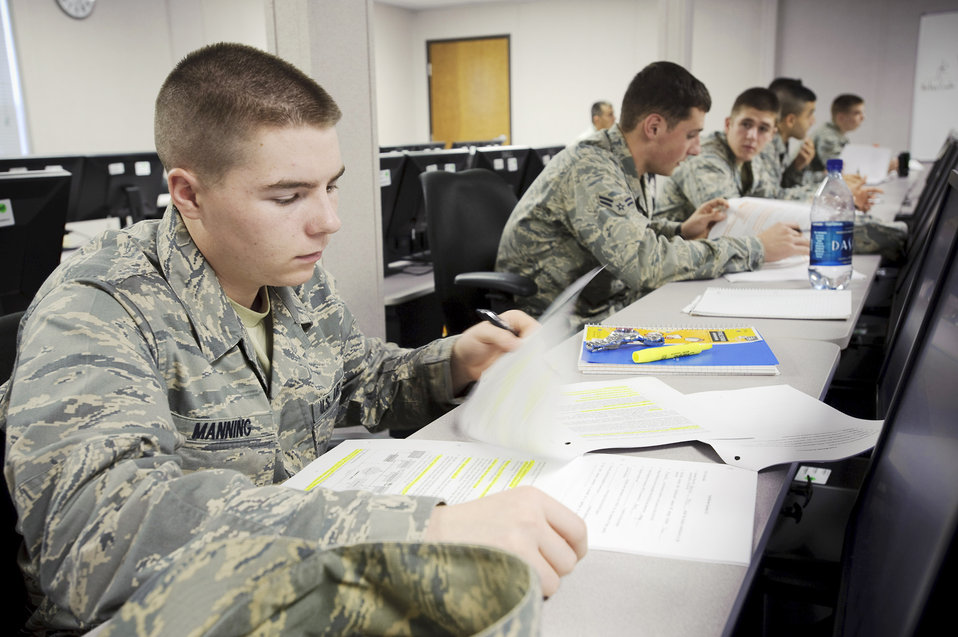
First group of BMT graduates begin sensor operator technical school

Airman Basic Corey Manning reviews his student workbook during phase one of the remotely piloted aircraft sensor operator training taught by 12th Operations Group, Det. 1, instructors Jan. 19, 2010, at Randolph Air Force Base, Texas. Airman Manning is a Basic Sensor Operator Course student.